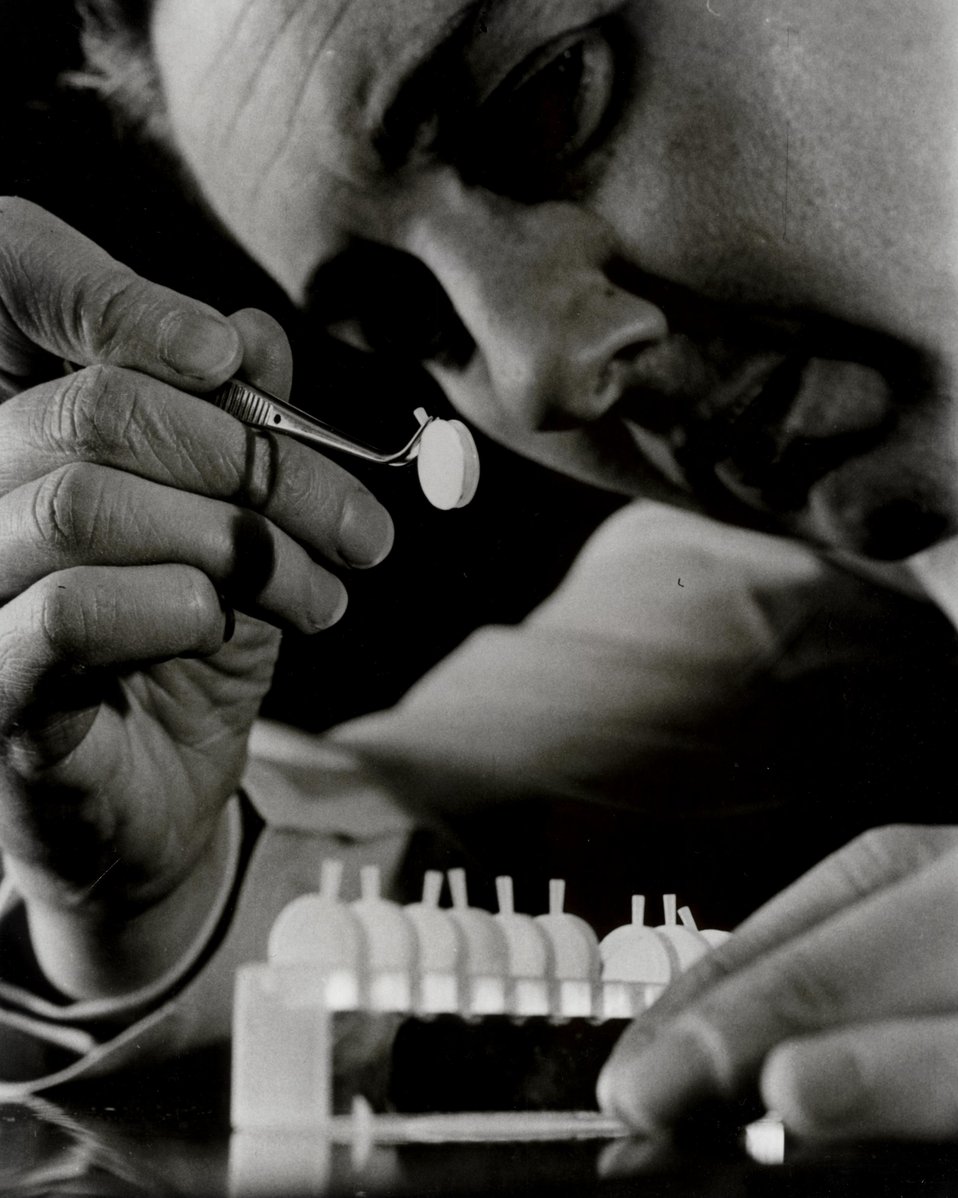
Research has made it possible to duplicate the living, continuously functioning system of human blood cell reproduction outside the human body.